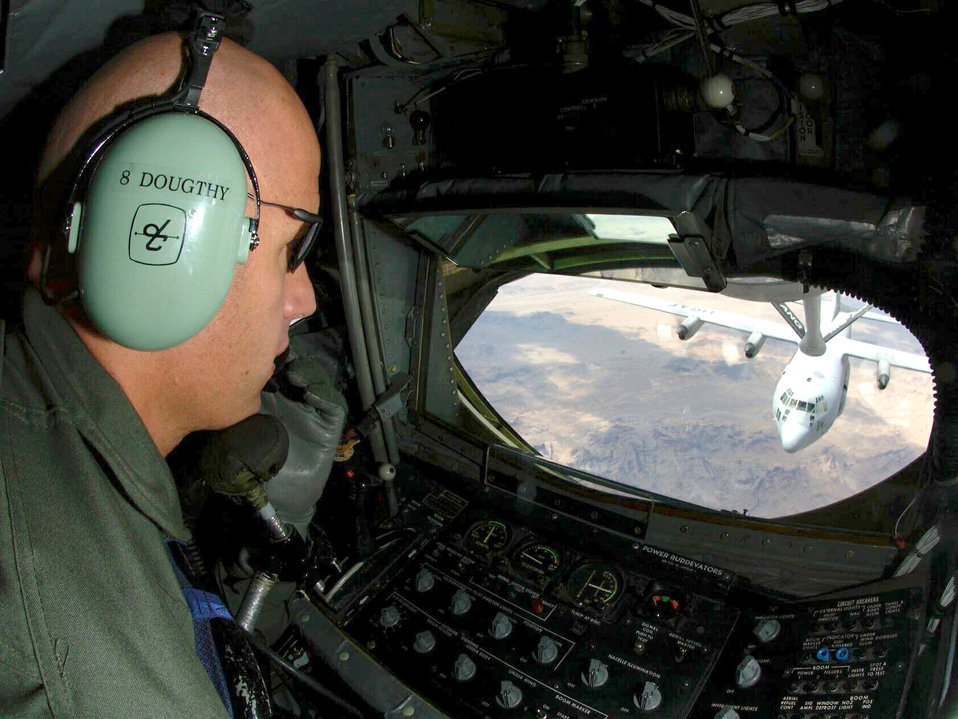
Fueled and ready

Staff Sgt. Mark Dougthy coordinates positioning of a KC-135E Stratotanker with a C-130 Hercules while he operates the boom during an air refueling Friday, April 14, 2006, over Tucson, Ariz. Sergeant Dougthy and the KC-135E are from the Air National Guard's 101st Air Refueling Wing at Bangor, Maine. The C-130 is assigned to the 42nd Electronic Combat Squadron at Davis-Monthan Air Force Base, Ariz.